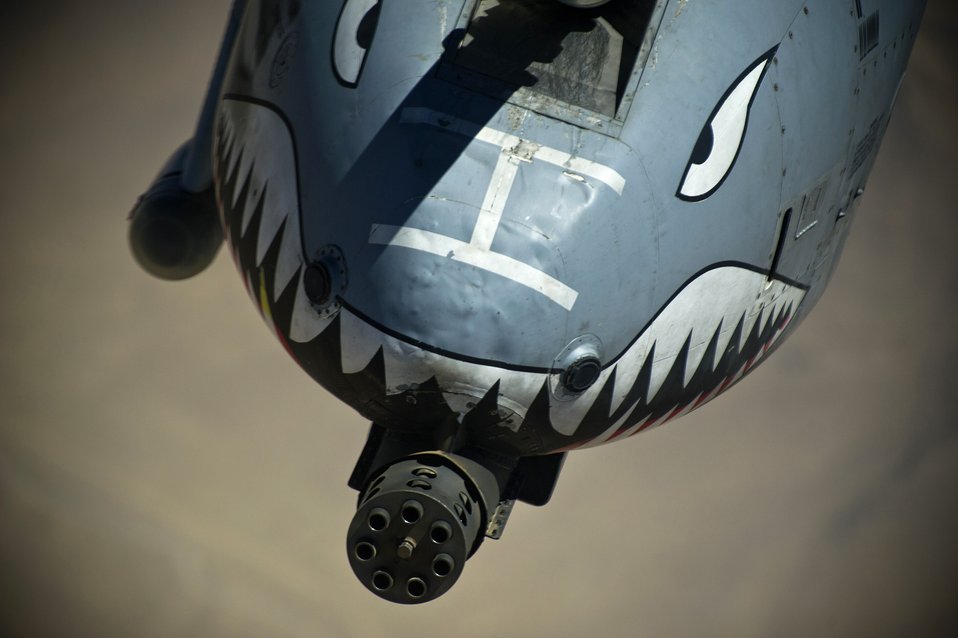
Thirsty

An A-10 Thunderbolt II is refueled Aug. 18, 2011, over Southern Afghanistan. The most prominent feature of the A-10 Thunderbolt II is the 30 mm GAU-8/A Avenger Gatling-gun cannon. This weapon is capable of firing 3,900 rounds a minute and can defeat an array of ground targets, including tanks.